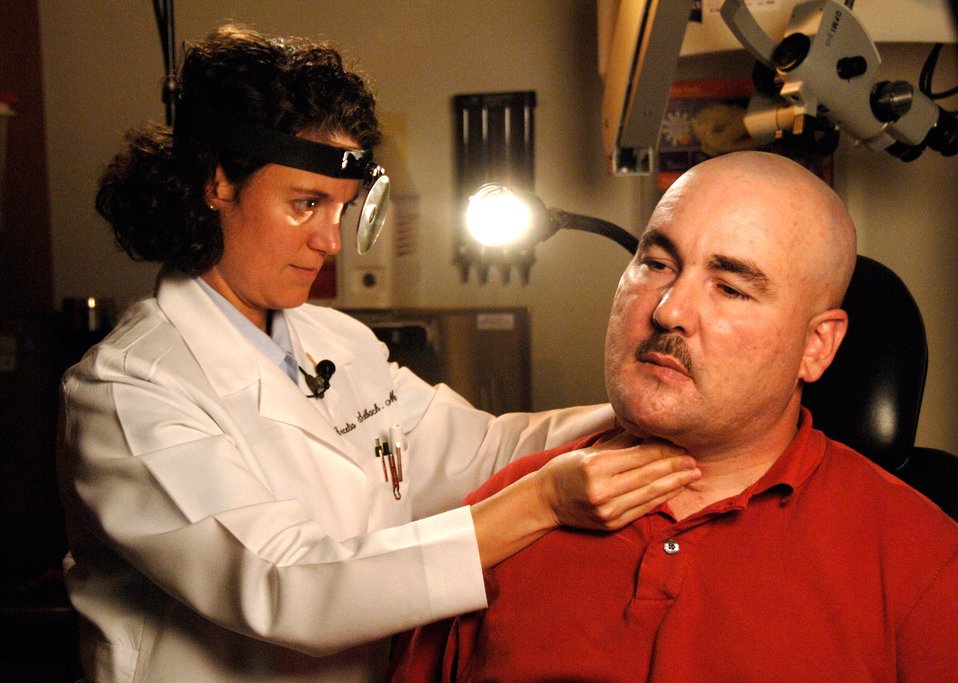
Stereolithography

Maj. (Dr.) Cecelia Schalbach, chief of head and neck microvascular surgery at Wilford Hall Medical Center, Lackland Air Force Base, Texas, examines the progress of Army Staff Sgt. Terry Saffron's jaw rebuild. His jaw was injured by shrapnel from an improvised explosive device in May 2004 in Iraq. Sergeant Saffron was referred to Wilford Hall for additional surgeries to treat his war wounds.